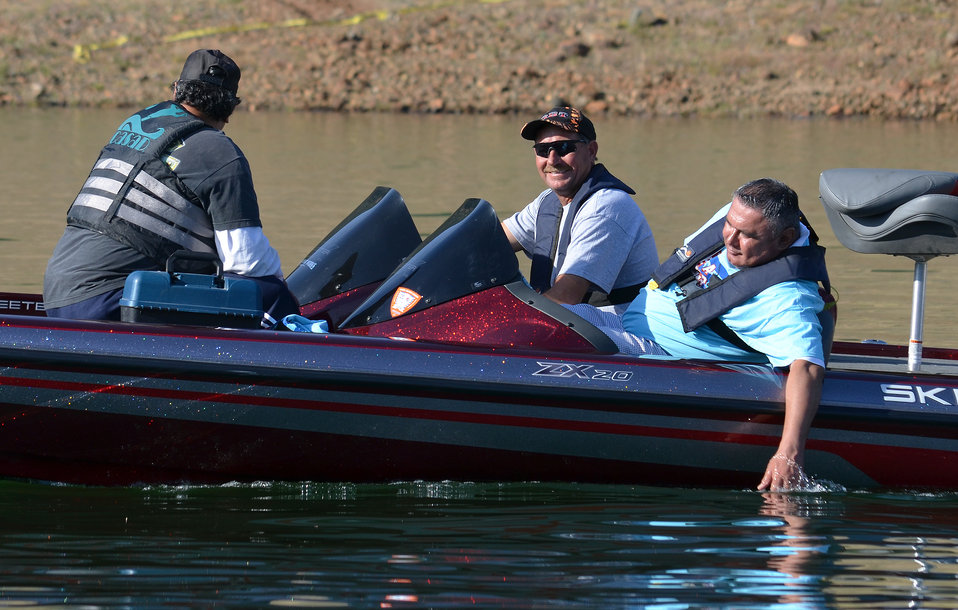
Take a Warrior Fishing 2014 at Pine Flat Lake

Cool waters in morning mean all bass should take warning Pine Flat Lake, the U.S. Army Corps of Engineers Sacramento District park near Piedra, Calif., hosted Take a Warrior Fishing on May 3, 2014. The recreational event sponsored by Central Valley Veterans and their corporate donors, plus bright sunshine and good fishing, attracted 68 veterans and their families. A team of over 100 volunteers made sure veterans and their families enjoyed a day of fishing, fun and food.